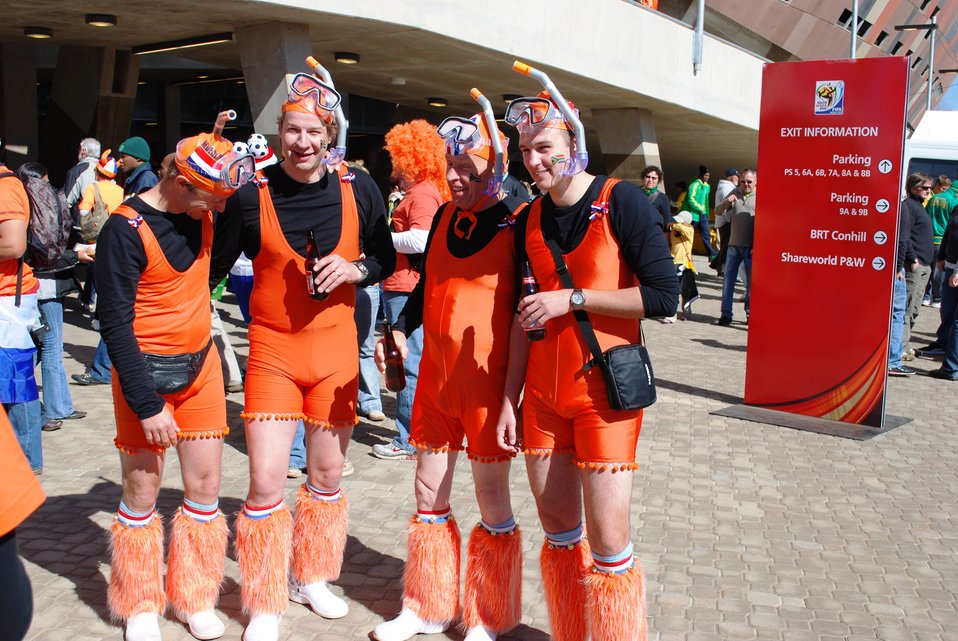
Dutch Fans Show Their Pride

Dutch fans dressed in orange show their pride during the Netherlands vs. Denmark World Cup soccer match at Soccer City Stadium in Johannesburg, South Africa, on June 14, 2010.